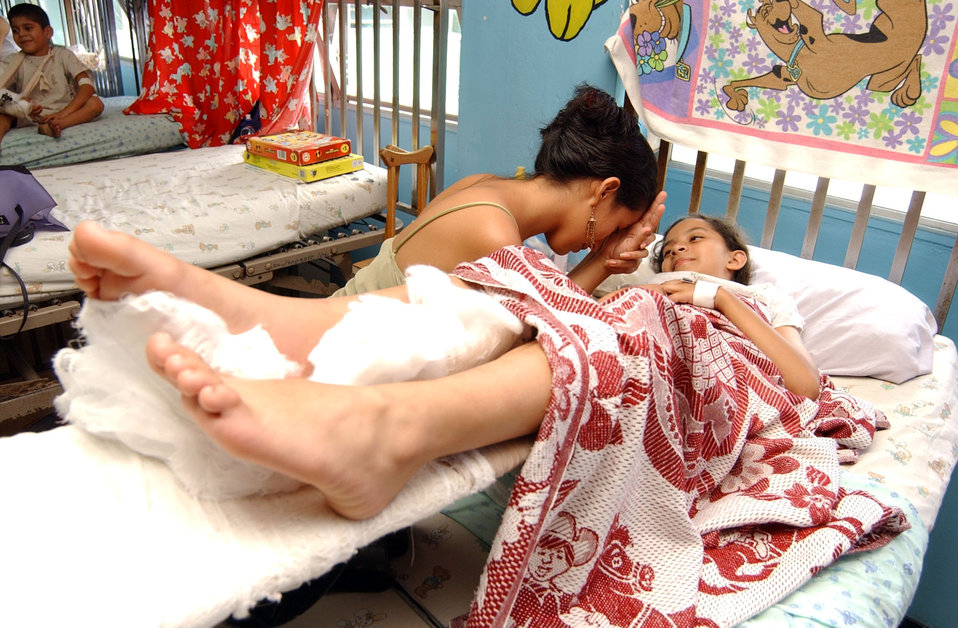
Americans, Hondurans team to fix broken bones

Katherine, a 10-year-old Honduran girl, talks to her cousin in the children's ward at the Hospital Esquela in Tegucigalpa, Honduras, after she had surgery Aug. 12 on her broken ankle. A medical team of eight people from Wilford Hall Medical Center at San Antonio and Joint Task Force-Bravo at Soto Cano Air Base, Honduras, treated more than 200 people and operated on more than 60 individuals during its two-week training exercise Aug. 5 to 19.